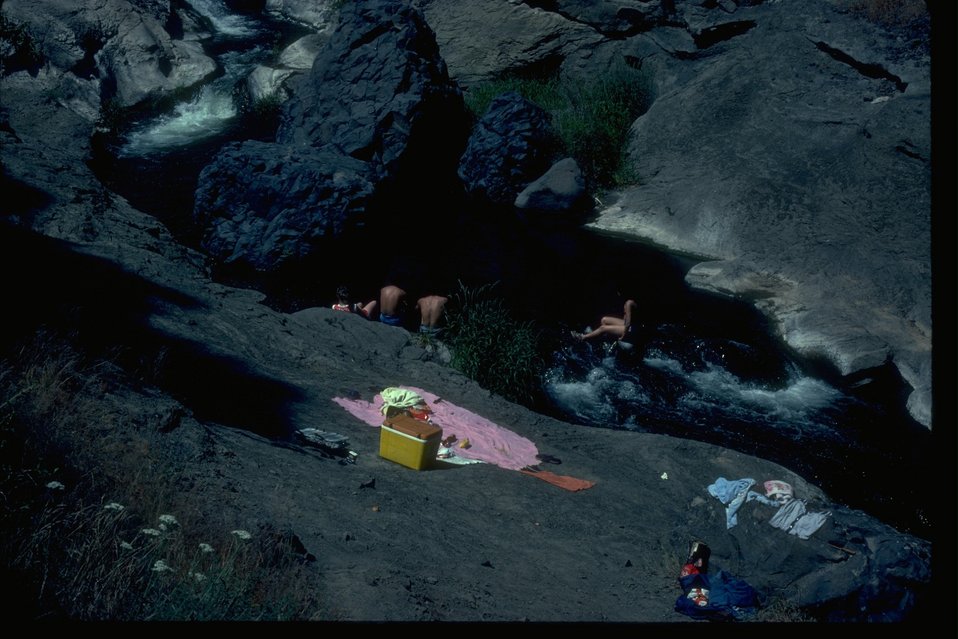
Picnicking at Douglas Creek in Douglas County, Washington